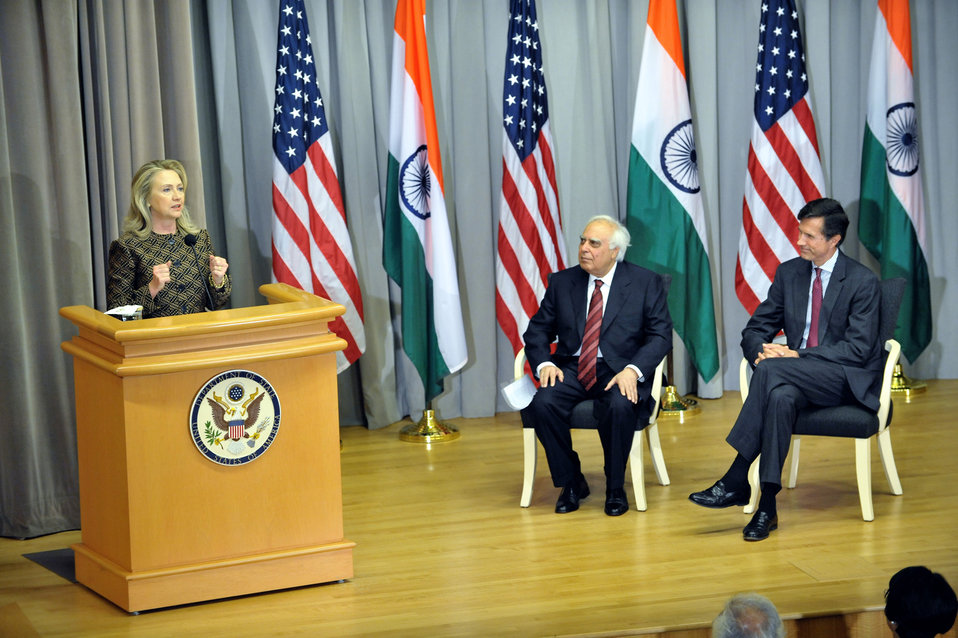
Secretary Clinton Delivers Remarks at the U.S.-India Higher Education Summit

U.S. Secretary of State Hillary Rodham Clinton delivers remarks with U.S. Department of State Assistant Secretary for South and Central Asian Affairs Robert O. Blake, Jr. and Indian Minister for Human Resource Development Kapil Sibal at the U.S.-India Higher Education Summit at the George C. Marshall Center in Washington, D.C. on June 12, 2012.